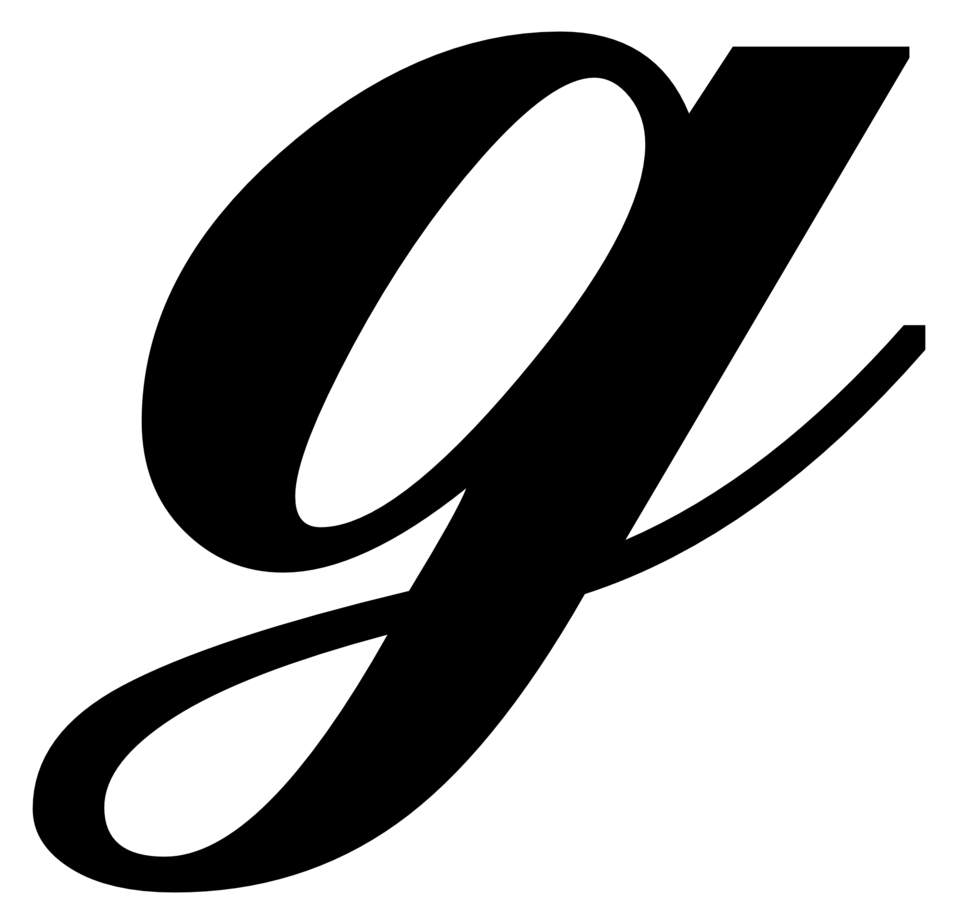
Unicode Character from the Letterlike Symbols (2100–214F) block.